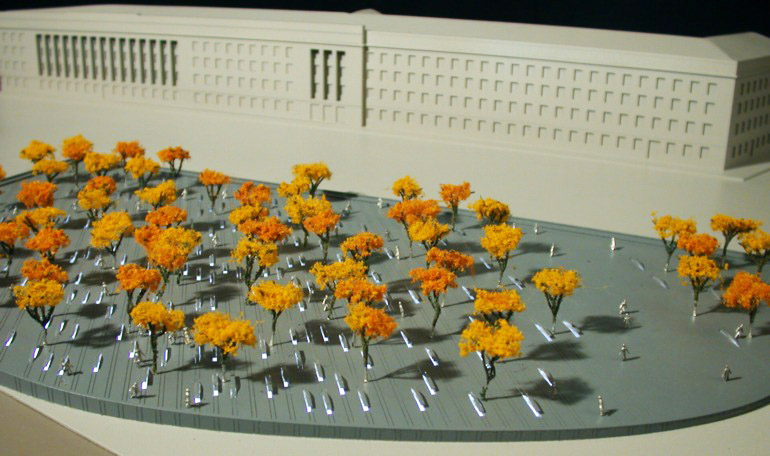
JCS chairman cites Pentagon Memorial's importance

This artist's rendition of the Pentagon Memorial shows the 184 memorial units, each dedicated to an individual victim, including the 59 lives lost on American Airlines Flight 77 and the 125 lives lost in the Pentagon. The memorial will be dedicated Sept. 11.